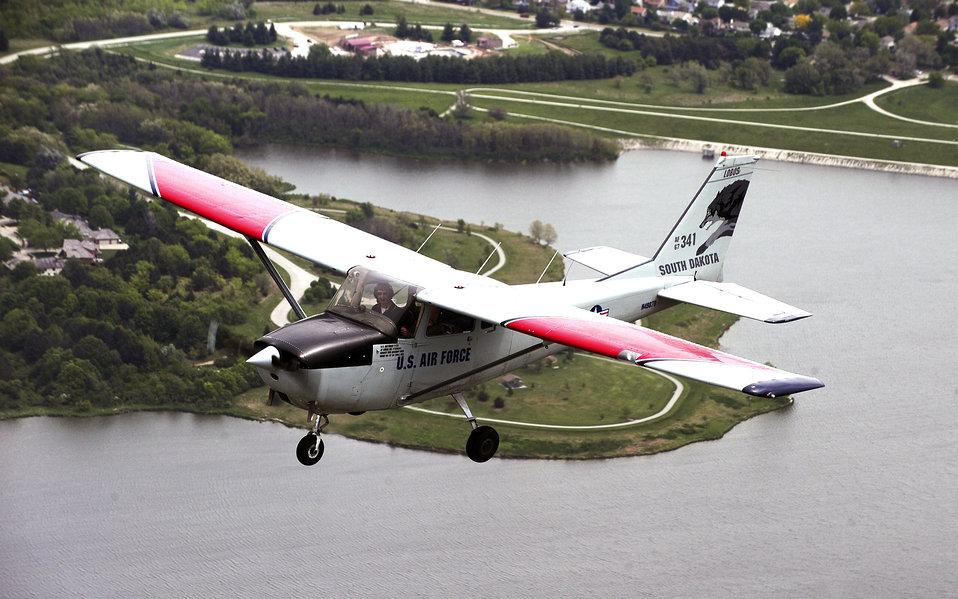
Look at me...

Flight Instructor Barb Kalden flies over Zorinsky Lake during Aviation Opportunities Day hosted by the LeMay Aero Club May 15, 2010, at Offutt Air Force Base, Neb. The event allowed teenagers to prep an aircraft for preflight. Attendees were also given aircraft tours and a one-hour introductory flight with an instructor.